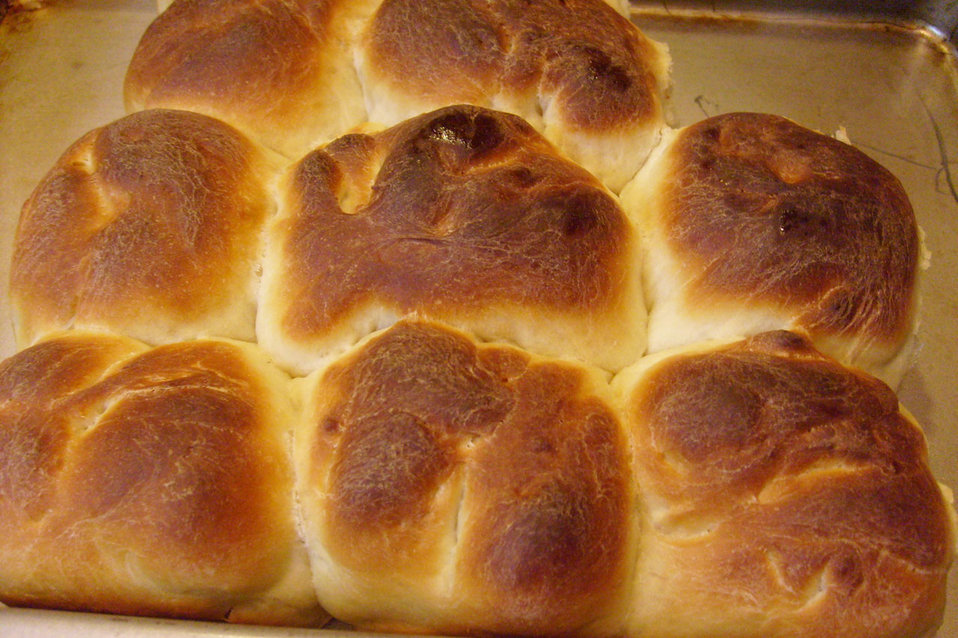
Dinner rolls.